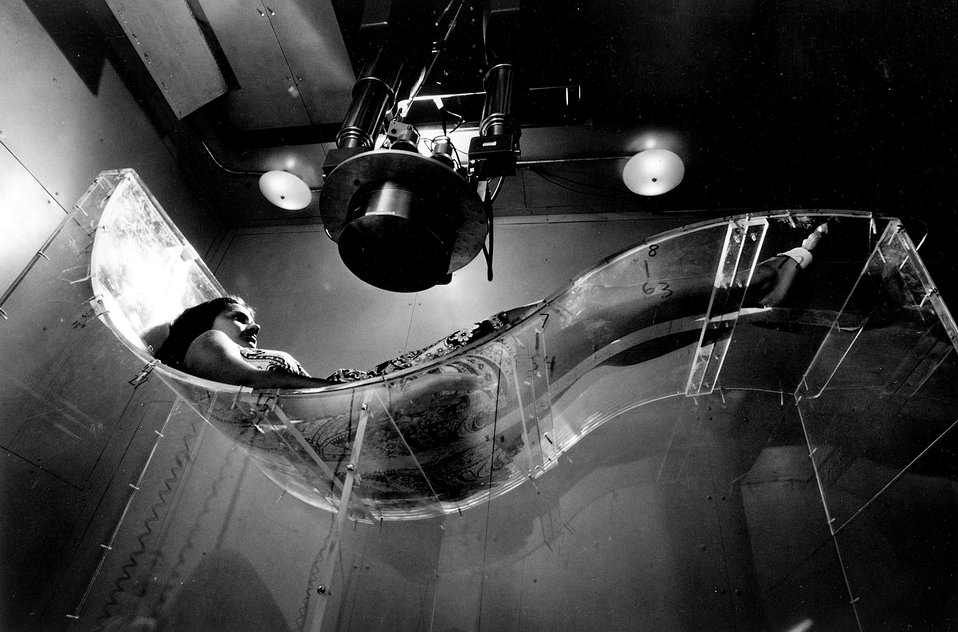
Although most of the sources of man-made radiation provide some benefit to man, we must continually evaluate the risks versus benefits of any radiation we add to the environment. Circa 1972.